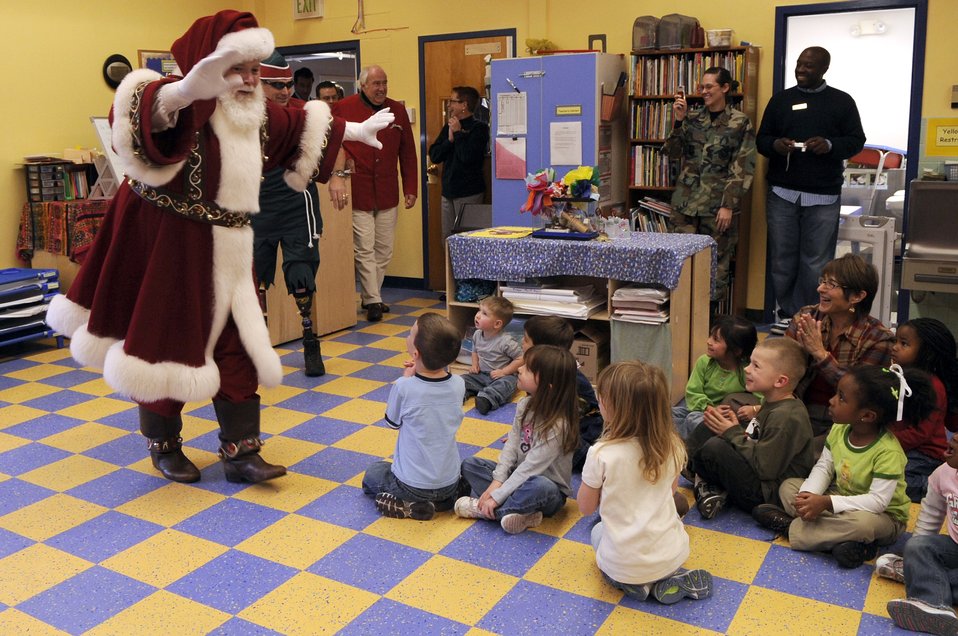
Santa Claus is coming to town

Santa Claus and Elf Dee make a surprise visit to a child development center Dec. 23 at Peterson Air Force Base, Colo.